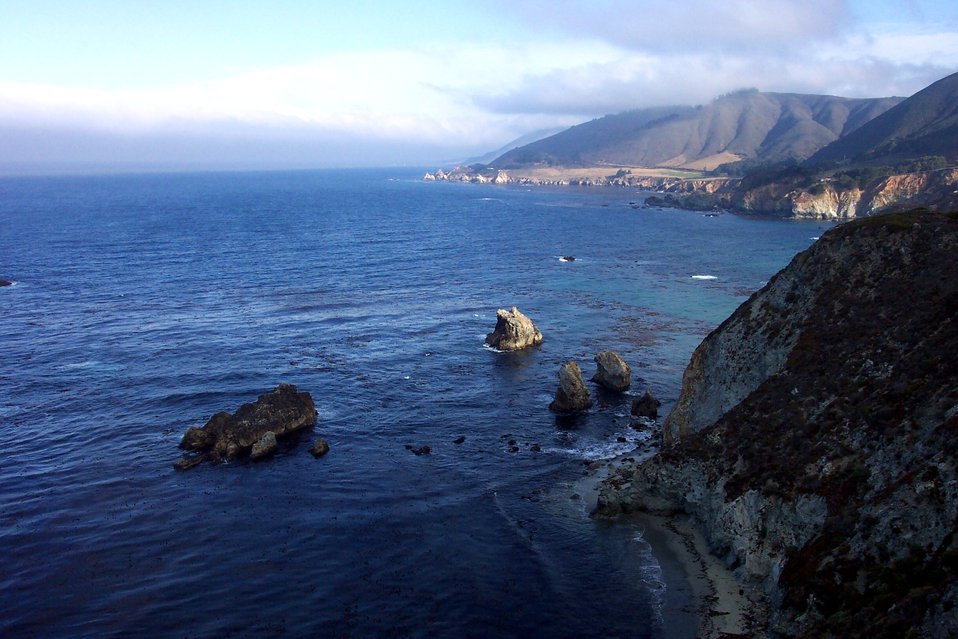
Looking north along the Big Sur coastline early in the morning. Northwestern slopes still are shaded.